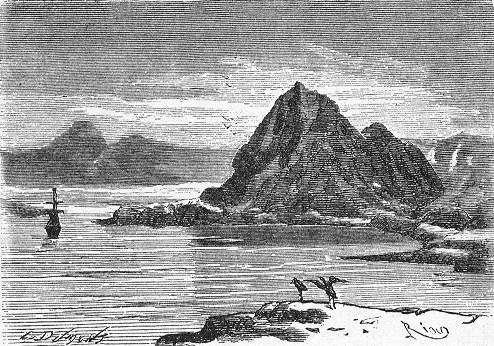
An illustration from Jules Verne's novel 'Journeys and Adventures of Captain Hatteras', part I: 'The English at the Noth Pole' drawn by Édouard Riou and/or Henri de Montaut. Polski: Ilustracja powieści Juliusza Verne'a 'Podróże i przygody kapitana Hatterasa', części I: 'Anglicy na Biegunie Północnym' autorstwa Édouarda Riou i/lub Henri de Montauta. Français : Jules Verne: 'Voyages et aventures du capitaine Hatteras - Les Anglais au Pôle Nord', Édouard Riou et Henri de Montaut.